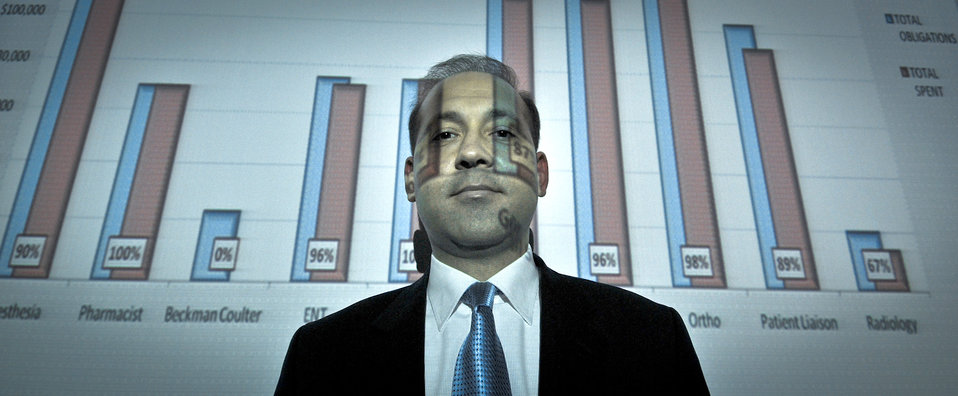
Incirlik medical group earns AF best practice

Serdal Gurses displays spreadsheet Oct. 20, 2010, that was recognized as an Air Force best practice. Mr. Gurses is a budget analyst for the 39th Medical Support Squadron at Incirlik Air Base, Turkey. An Air Force best practice is defined on the Air Force Manpower Agency website as